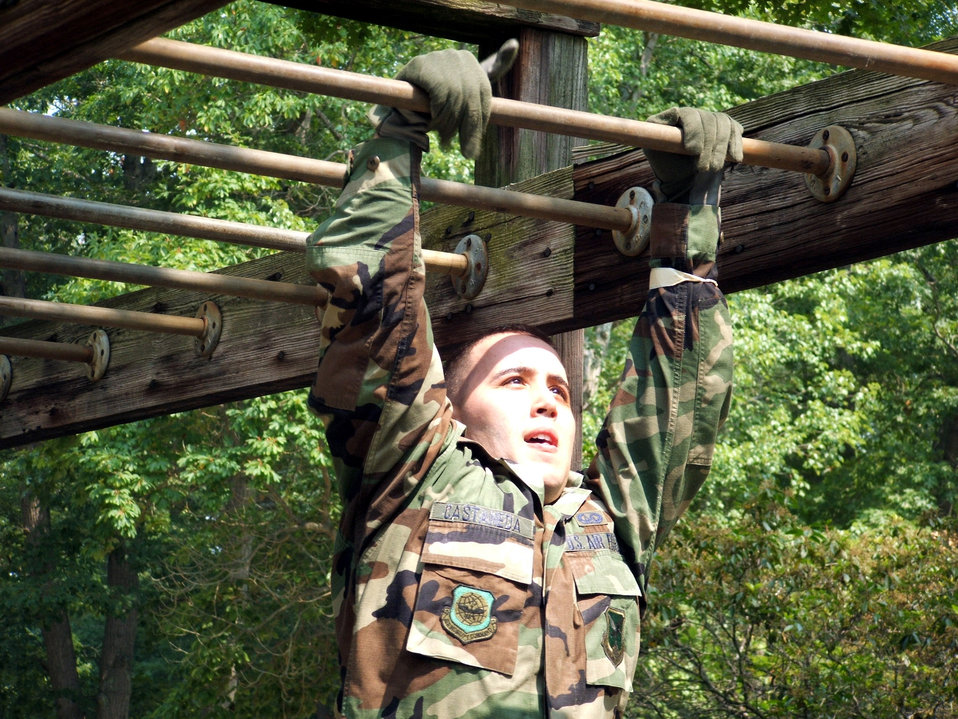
'Deployed' to New Jersey

FORT DIX, N.J. -- Senior Airman Leonardo Castaneda carries himself across bars during training at an obstacle course here as part of contingency skills training. Airman Castaneda is a chaplain's assistant training in preparation for deployment in support of the global war on terrorism.